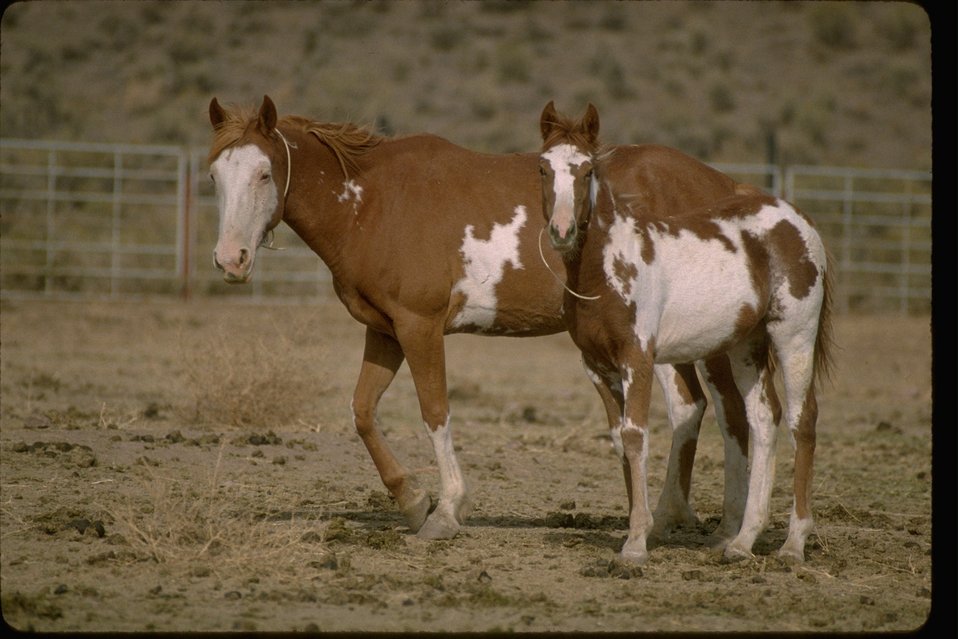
Wild Horses from South Steens HMA await their adoption at Burns Wild Horse Corrals.